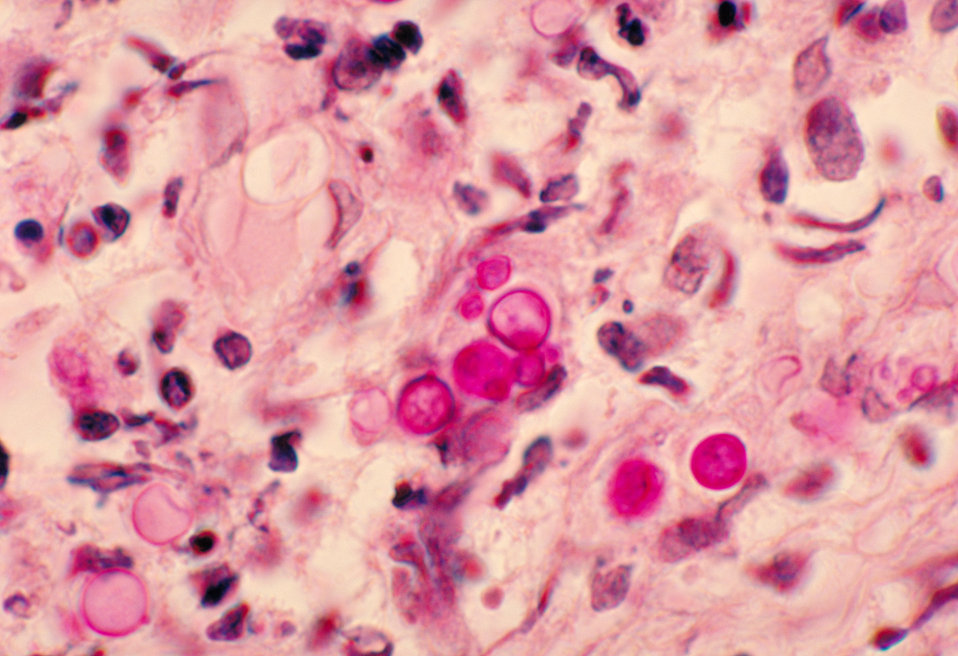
This micrograph reveals the histopathologic changes in phaeohyphomycosis due to Wangiella dermatitidis using PAS stain.